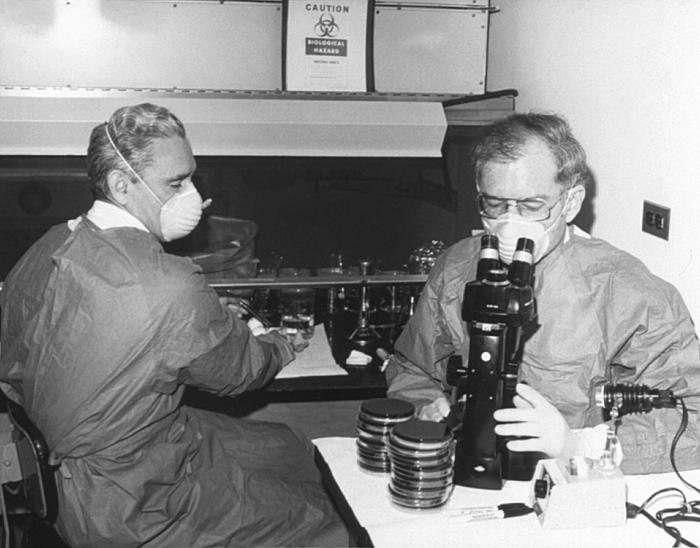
This historic photograph depicted Centers for Disease Control (CDC) laboratorian George Gorman at left, along side Dr. Jim Feeley, while they were examining culture plates, i.e., Petri dishes, upon which the first environmental isolates of Legionella pneumophils had been grown.